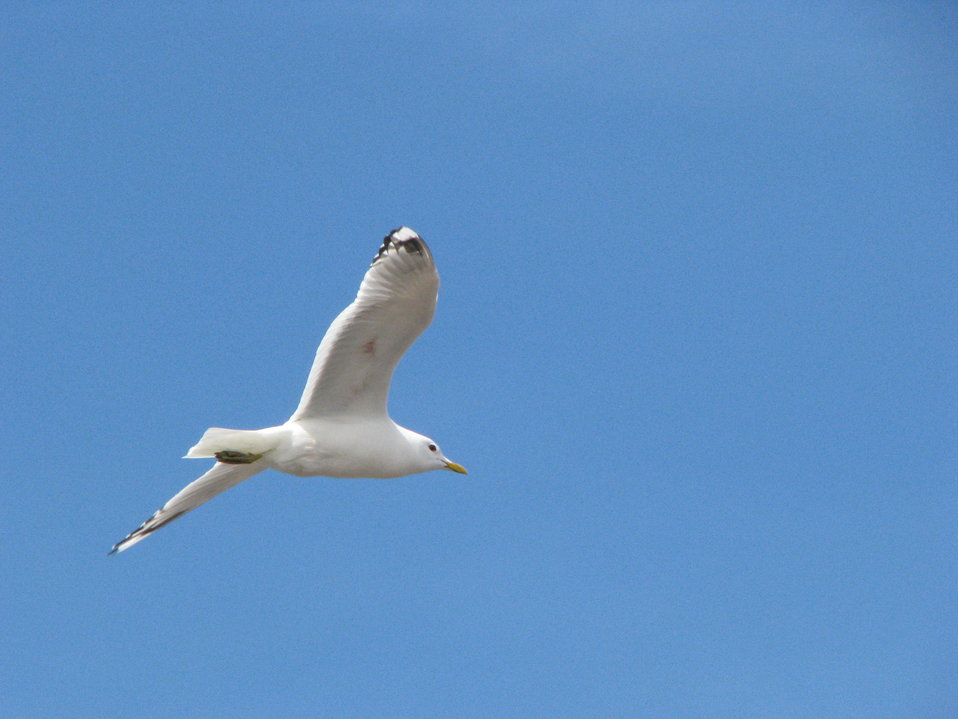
Gull in flight

Yukon Delta NWR